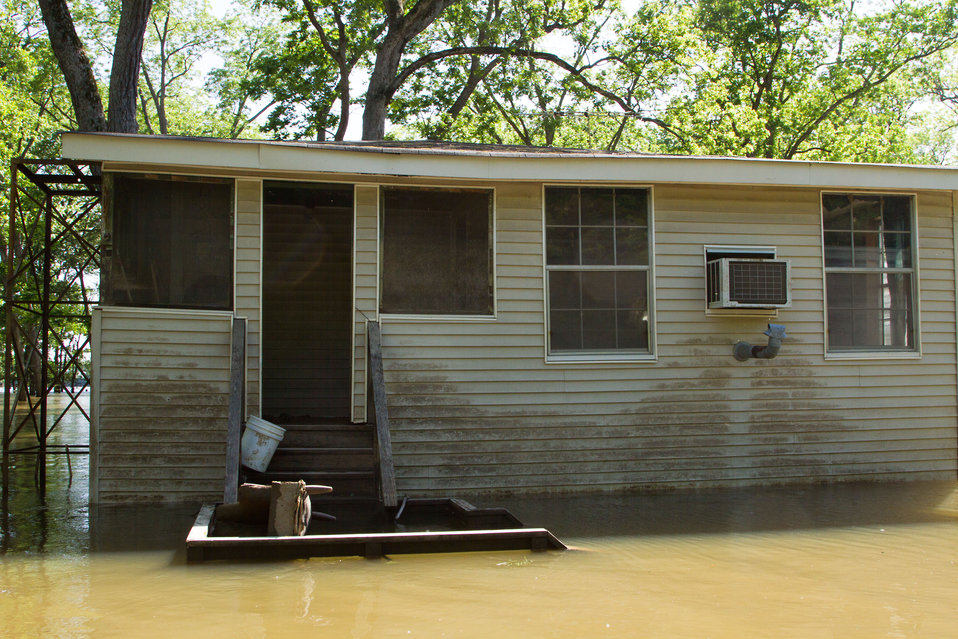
Stairs lead below the house to the ground, several feet under water, while mud on the walls show how high the flood waters came up on this one of approximately 300 homes in the Lauderdale County river basin or “Below the Bluffs,” in TN, on Saturday, May 21, 2011. They are constructed either on stilts; or float on Styrofoam blocks and are tethered to stationary poles. This area is near Open Lake.